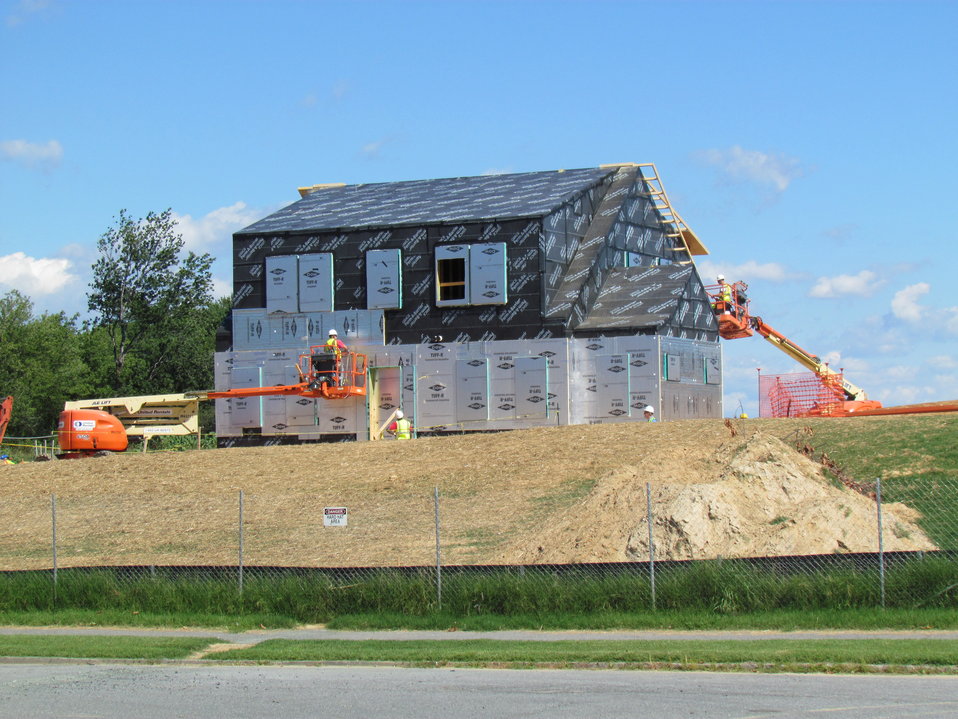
Net-Zero Energy Residential Test Facility - Photo showing workmen installing foil-faced insulation on exterior of facility.